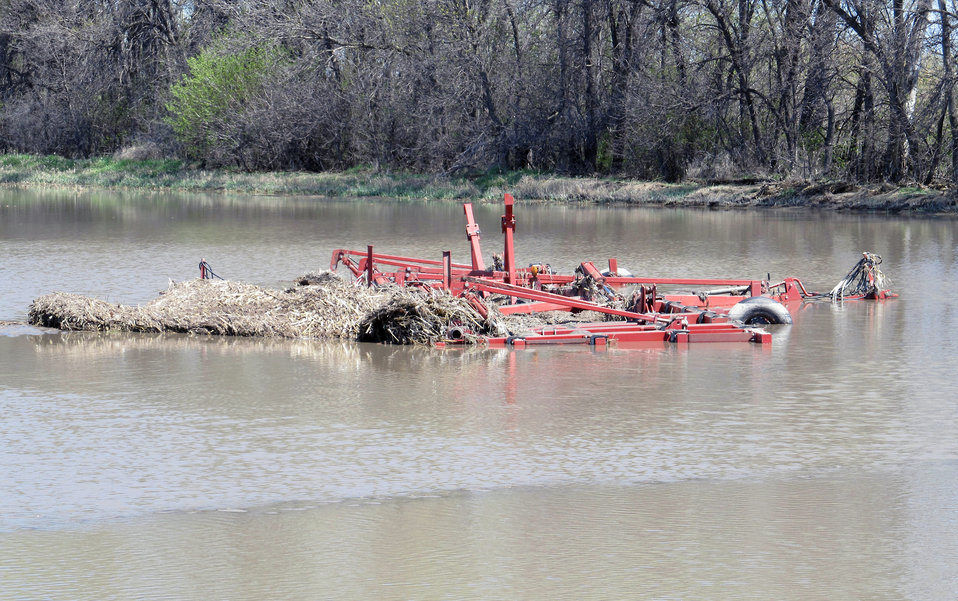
Flooding and water damage in the Park and Tongue River Watersheds located in Cavalier, Pembina and Cavalaier Counties in ND on Thursday, May 23, 2013.